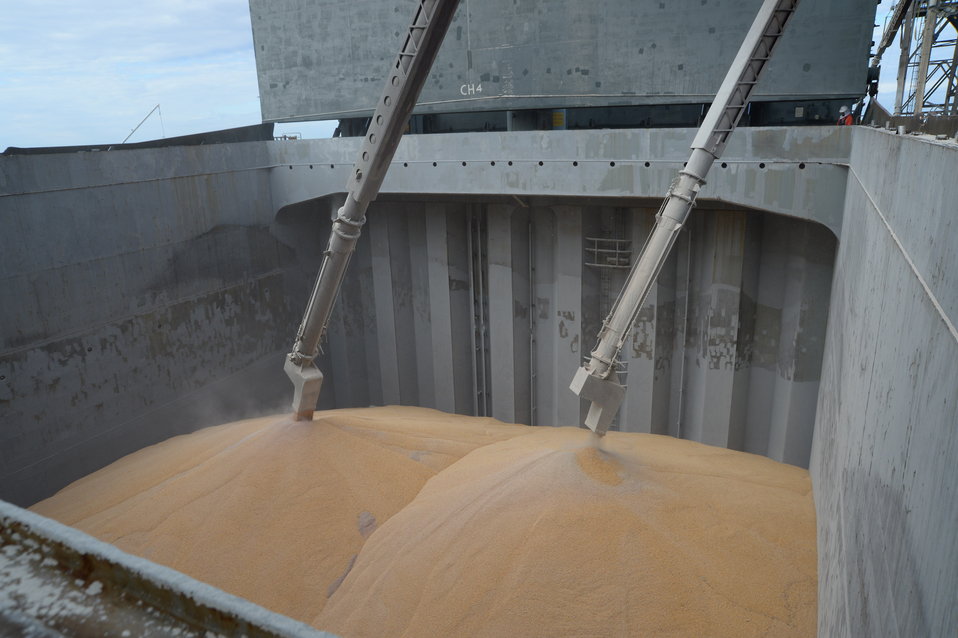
Grain is transferred from barges to storage facilities near the Port of New Orleans in New Orleans, LA on Tuesday, Nov. 19, 2013.